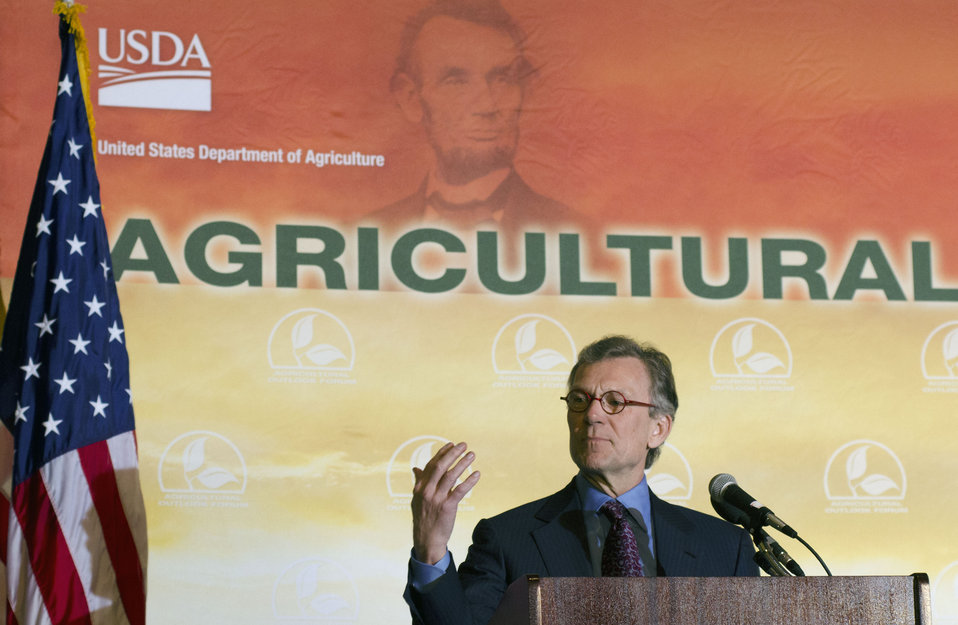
Former U.S. Senator from South Dakota Thomas A Daschle and Senior Policy Advisor, DLA Piper speaking on Plowing Ahead: Farming, Food Security, and the Future as the Distinguished Guest Speaker at the Opening session of the 2013 Agriculture Outlook Forum, in Arlington, VA, on Thursday, February 21, 2013.